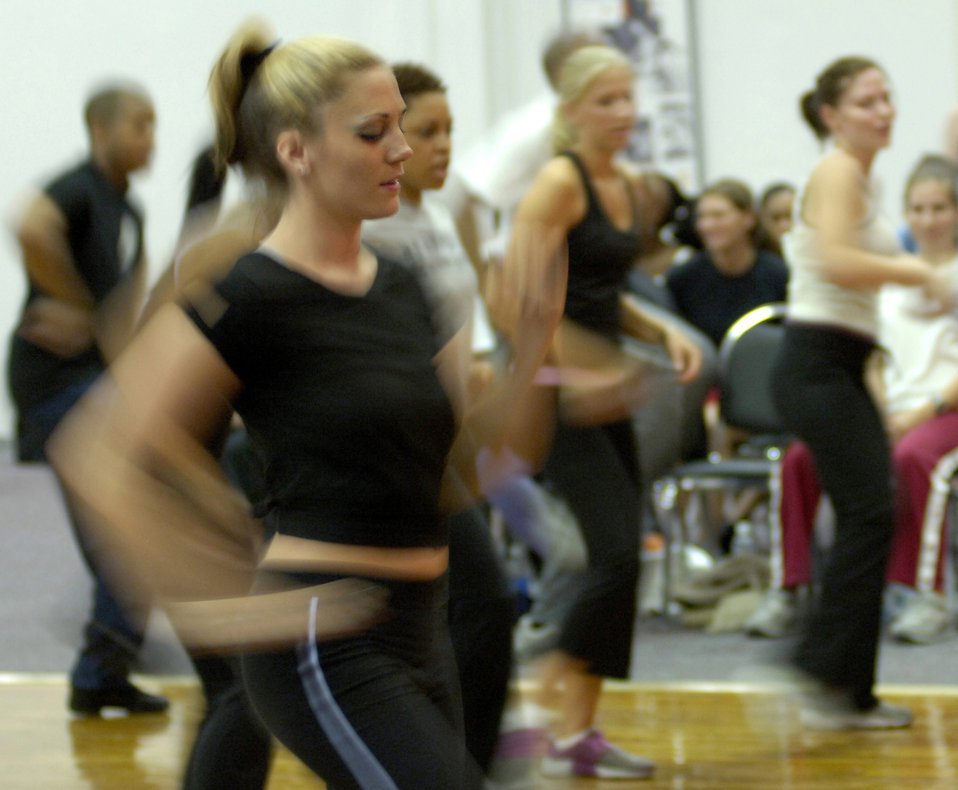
Tops In Blue

LACKLAND AIR FORCE BASE, Texas (AFPN) -- Melissa Ritz goes through a dance routine with prospective Tops In Blue performers. The performers were judged on their ability to perform, effort and potential shown during the audition. Ms. Ritz is a choreographer and a 1998 Tops In Blue performer.